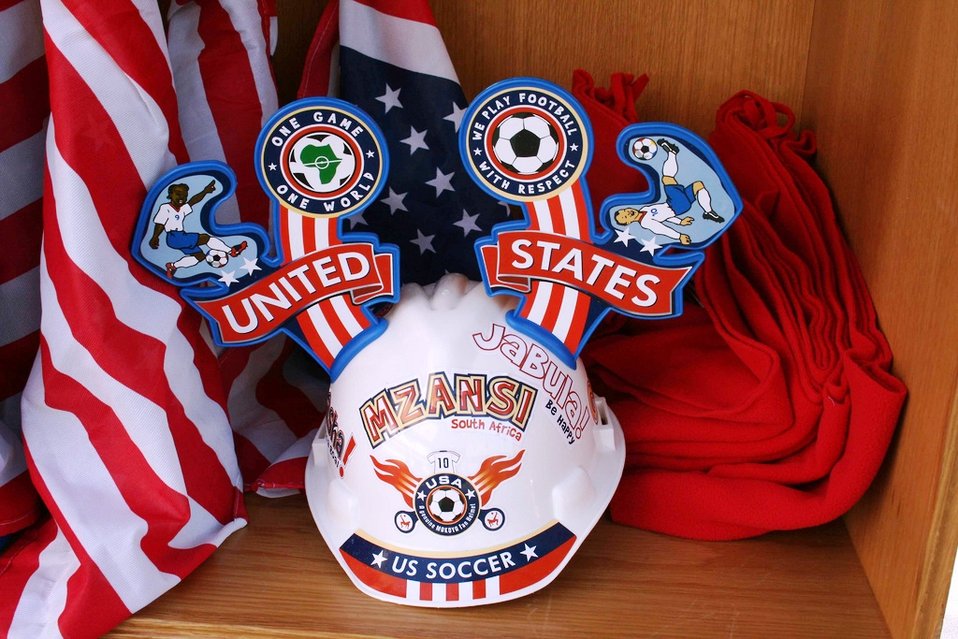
U.S.-South Africa Construct Helmet Shows Bilateral Partnership

A construction helmet showing the partnership of the United States and the host nation of the World Cup, South Africa, is displayed at the Team USA pep rally before the U.S. vs. Algeria World Cup match on June 23, 2010, in Pretoria, South Africa.